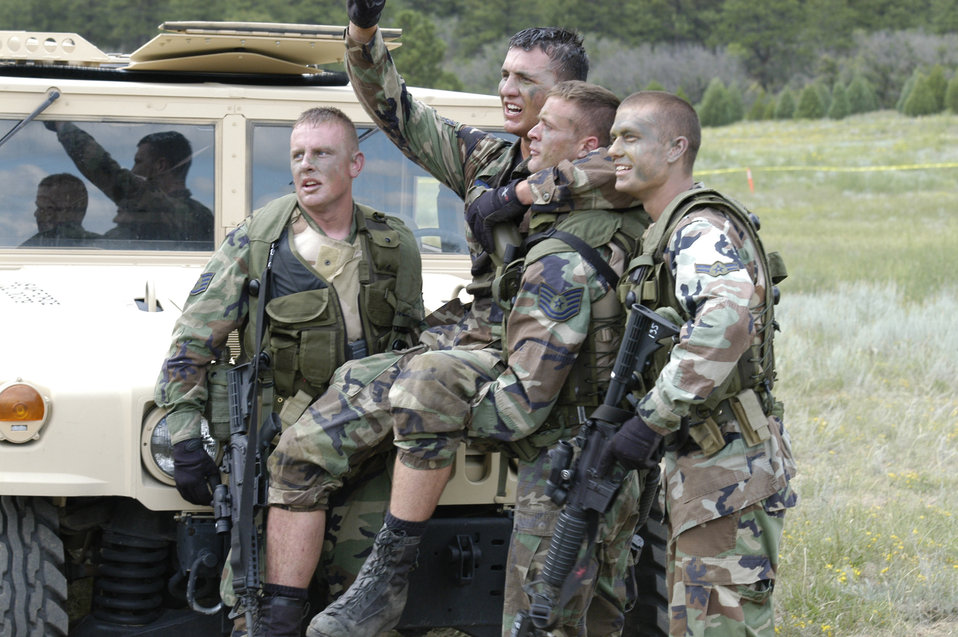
Guardian Challenge

Airmen from the 50th Security Forces Squadron celebrate Airman 1st Class Devin Stapelman's finish at the Guardian Challenge tactics competition at the U.S. Air Force Academy, Colo., on Aug. 14. Airman Stapelman is the youngest competitor from the 50th Space Wing at Schriever Air Force Base, Colo.